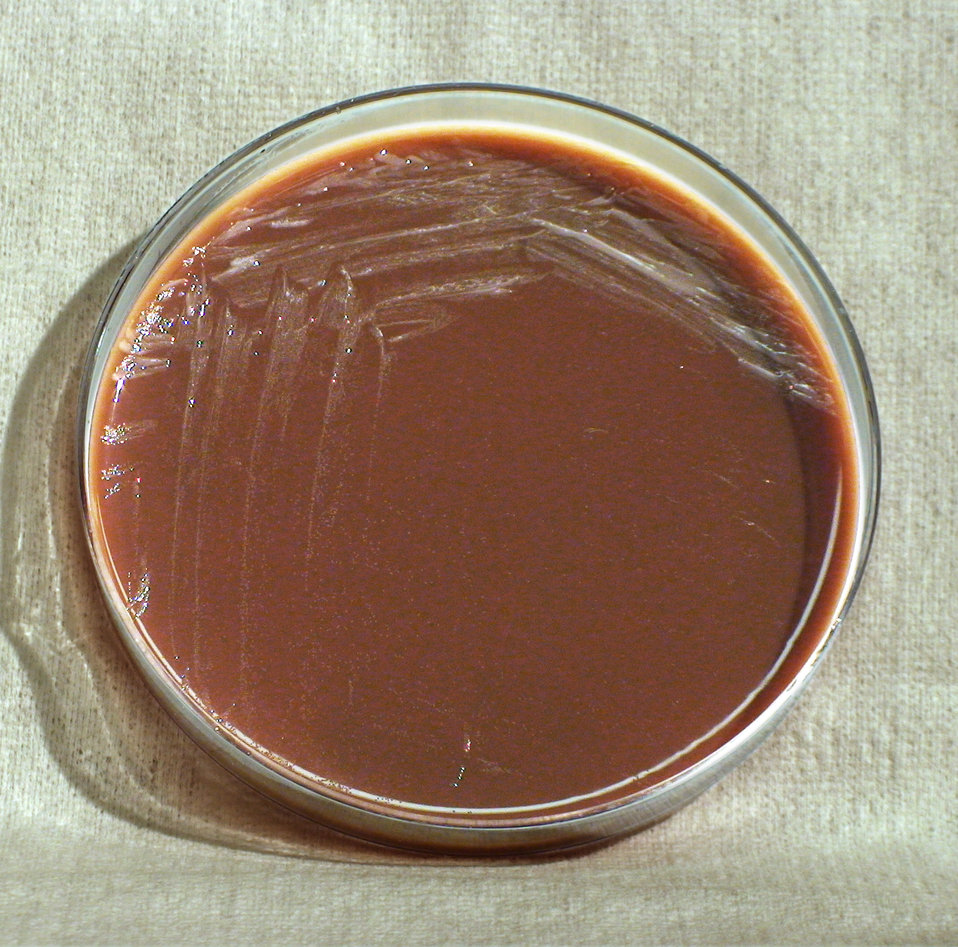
This photograph depicts the colonial morphology displayed by Gram-negative Brucella abortus bacteria, which was grown on a medium of chocolate agar, for a 48 hour time period, at a temperature of 37�C. See both PHIL 12368 and 12369, for views of B. abortus colonial growth, cultivated on the same medium and temperature, but at half the time period (24hr). B. abortus is a known cause for the disease brucellosis.